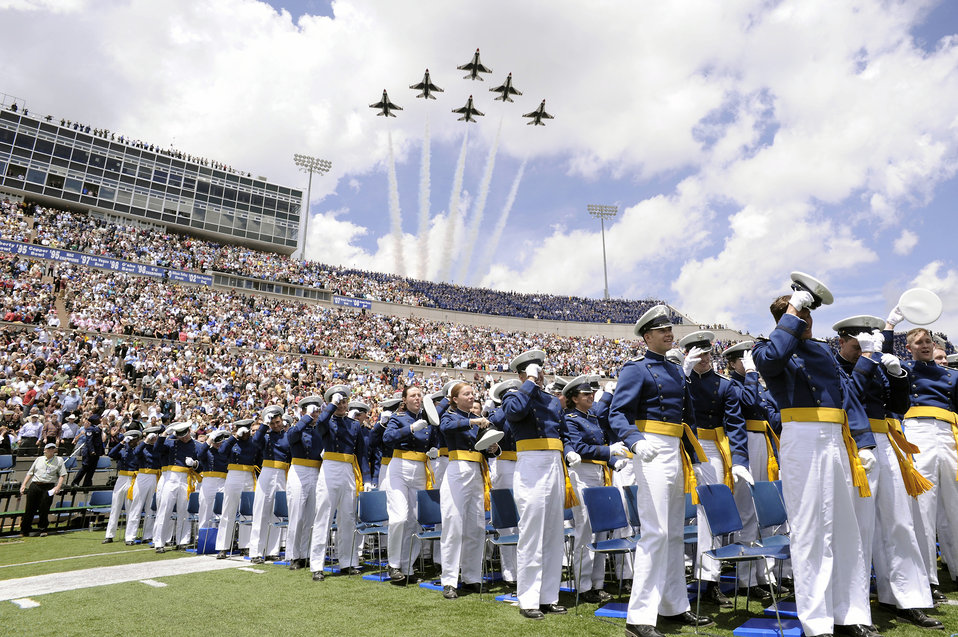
Joint Chiefs chairman delivers Academy commencement

The Thunderbirds fly over as 1001 U.S. Air Force Academy cadets are commissioned second lieutenants at the close of the class of 2010 graduation ceremony May 26, 2010, at the U.S. Air Force Academy, Colo.